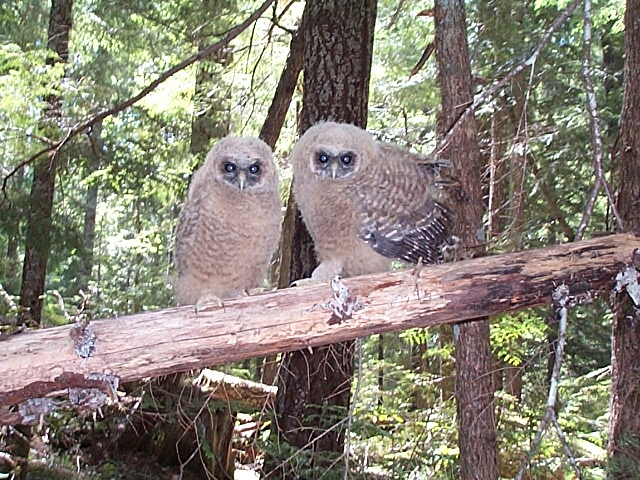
Threat display - Spotted Owls